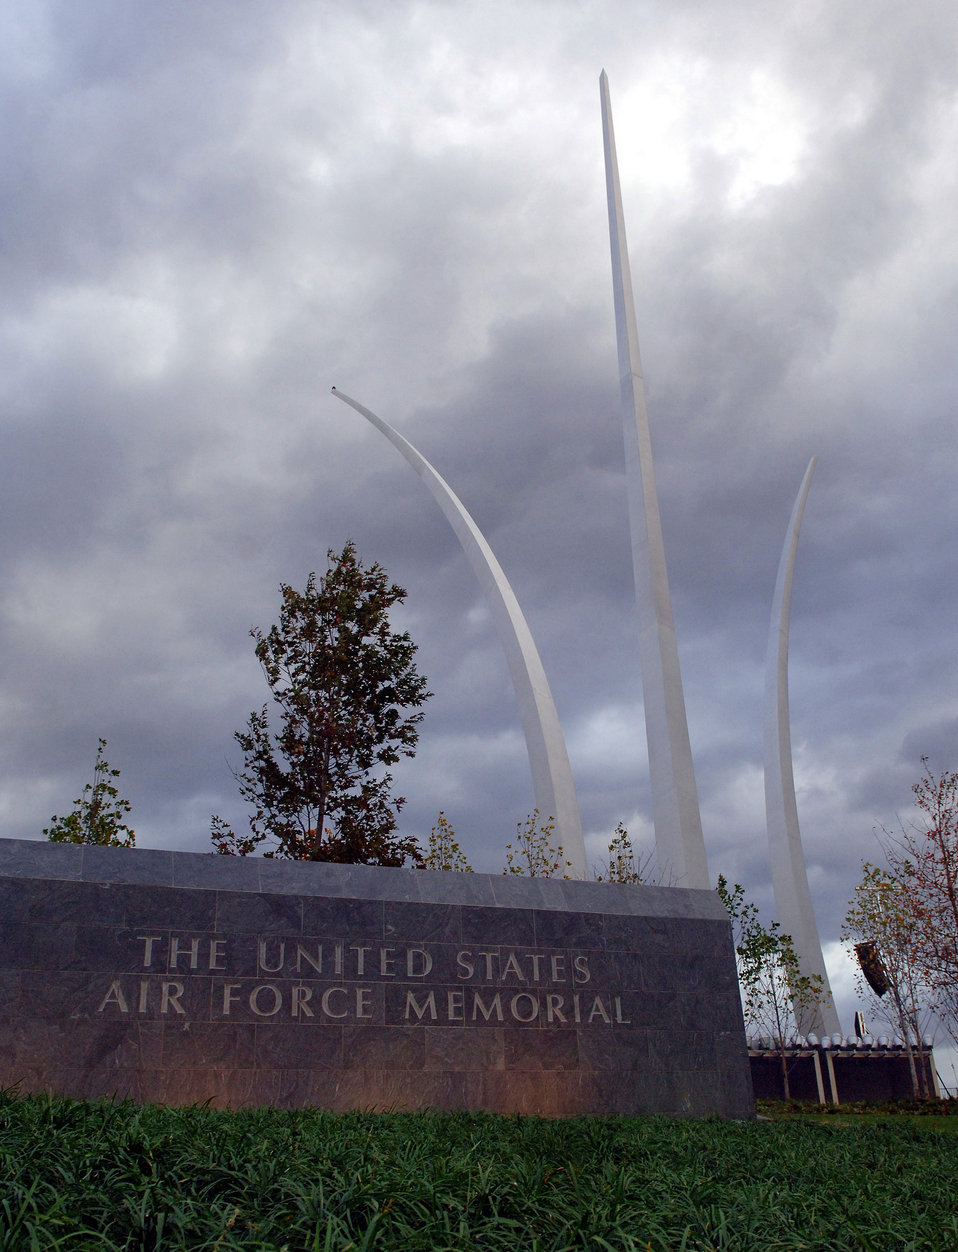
Memorial dedication to launch AF's 60th Anniversary observance

The Air Force Memorial in Arlington, Va., is the site of a dedication ceremony Oct. 14 at 9 a.m. Organizers braved the cooler afternoon temperatures Oct. 12 making final preperations for the dedication ceremony.